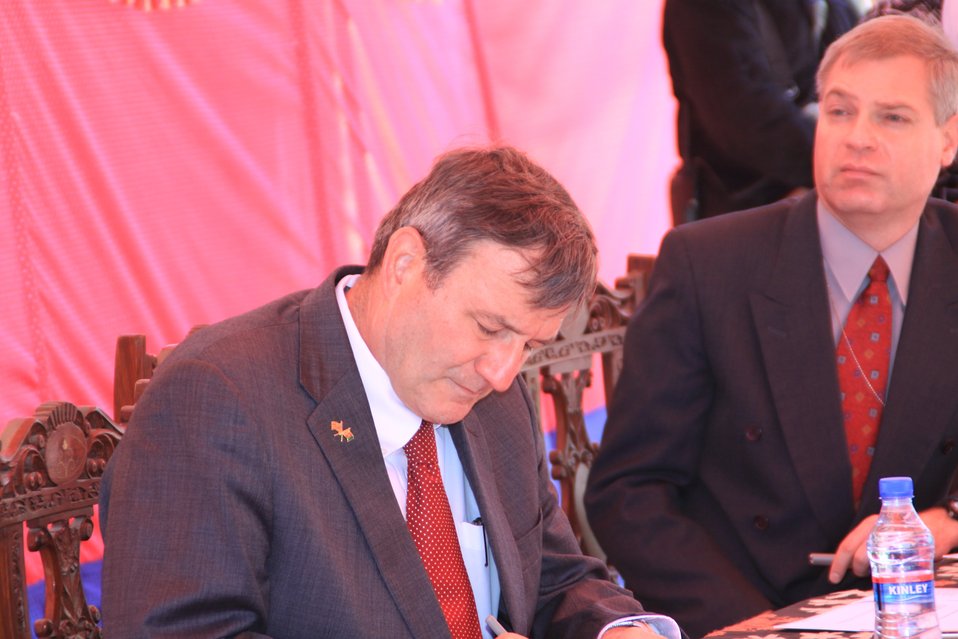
AVIPA Plus Wheat Seed Distribution 101005